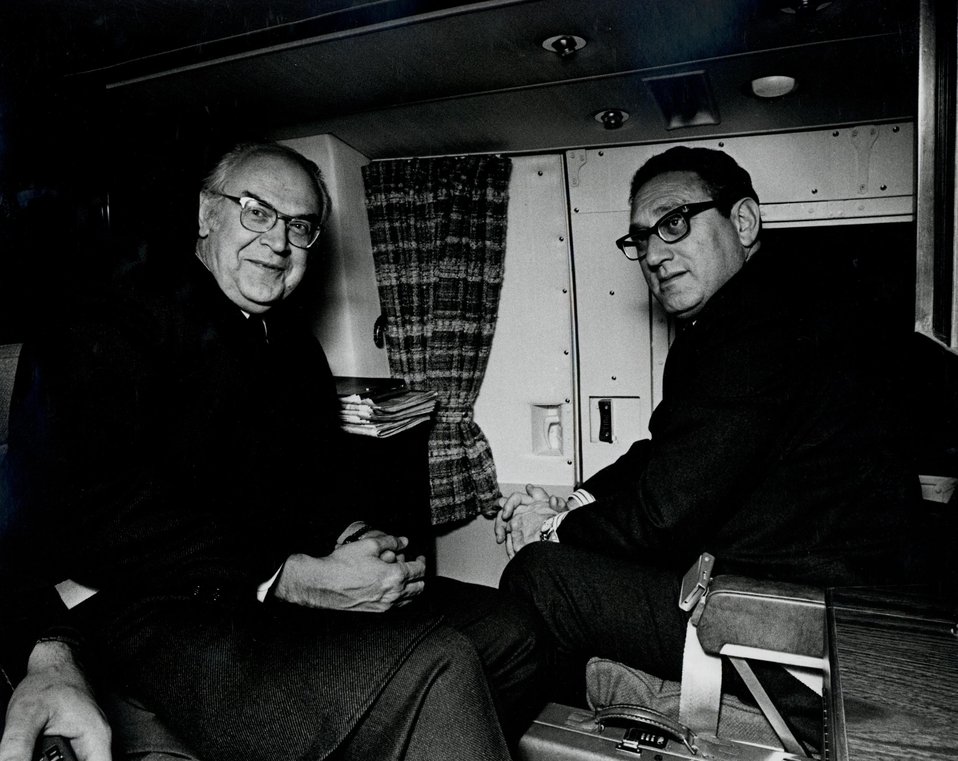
U.S. Secretary of State Henry Kissinger and Soviet Ambassador Anatoly Dobrynin meeting on helicopter, January 25, 1974

During Secretary Kissinger's term, the United States and the Soviet Union engaged in negotiations that resulted in a period of detente between the two nations.